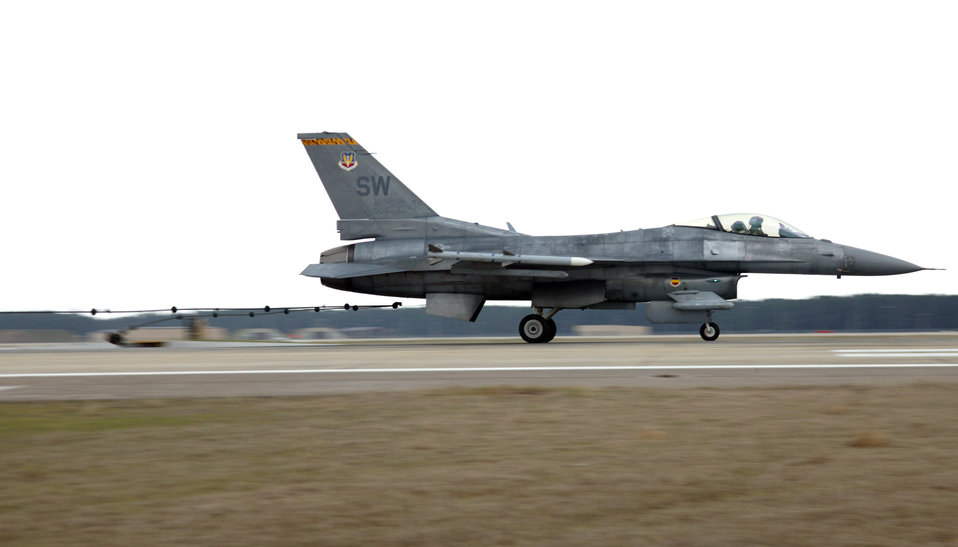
Arresting system stops aircraft safely

A hook on an F-16 Fighting Falcon catches the aircraft arresting system cable as part of a system test Friday, March 31, 2006.